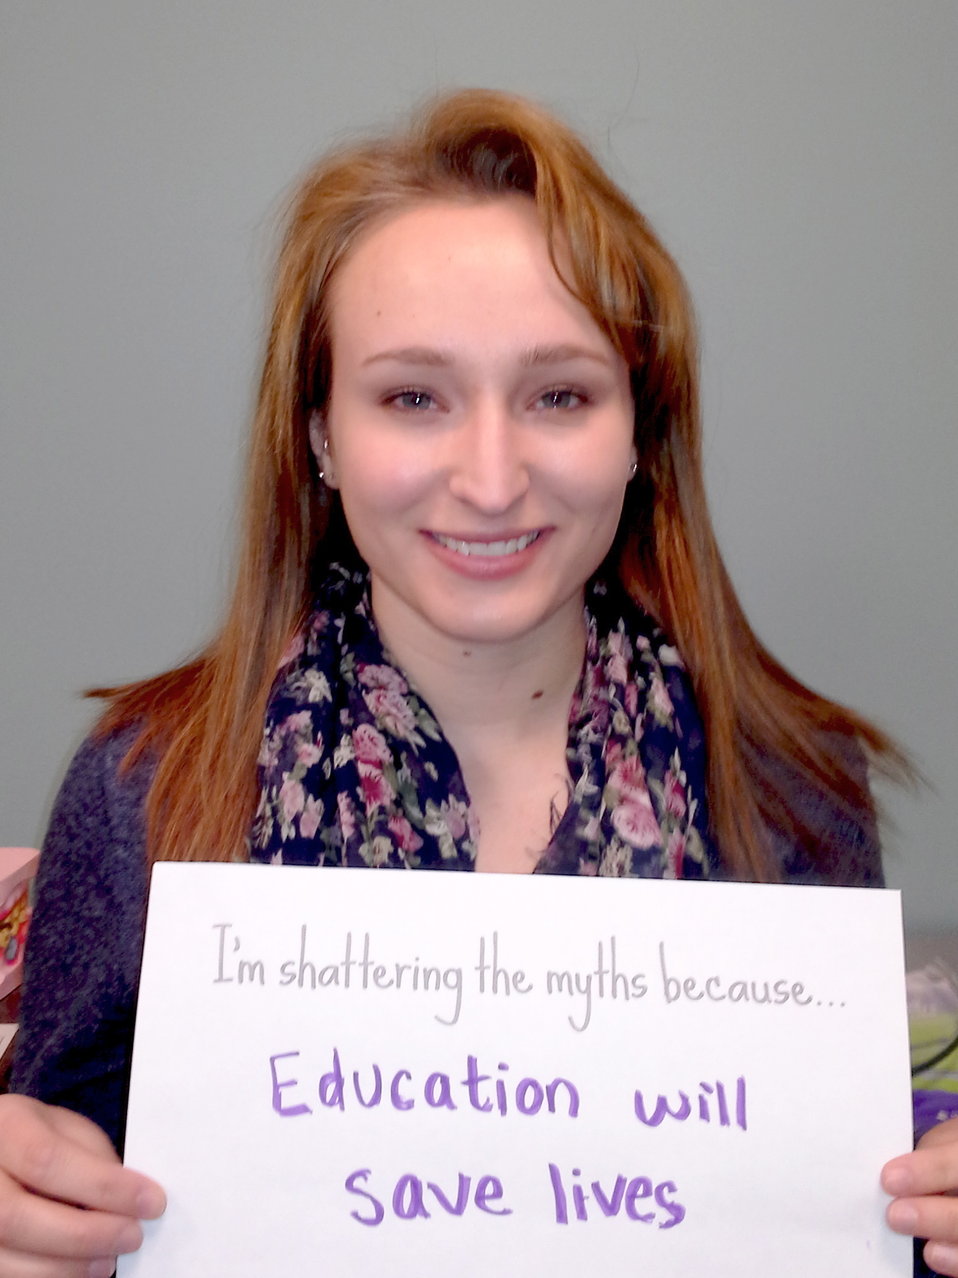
Shattering the Myths campaign in Winona, Minnesota